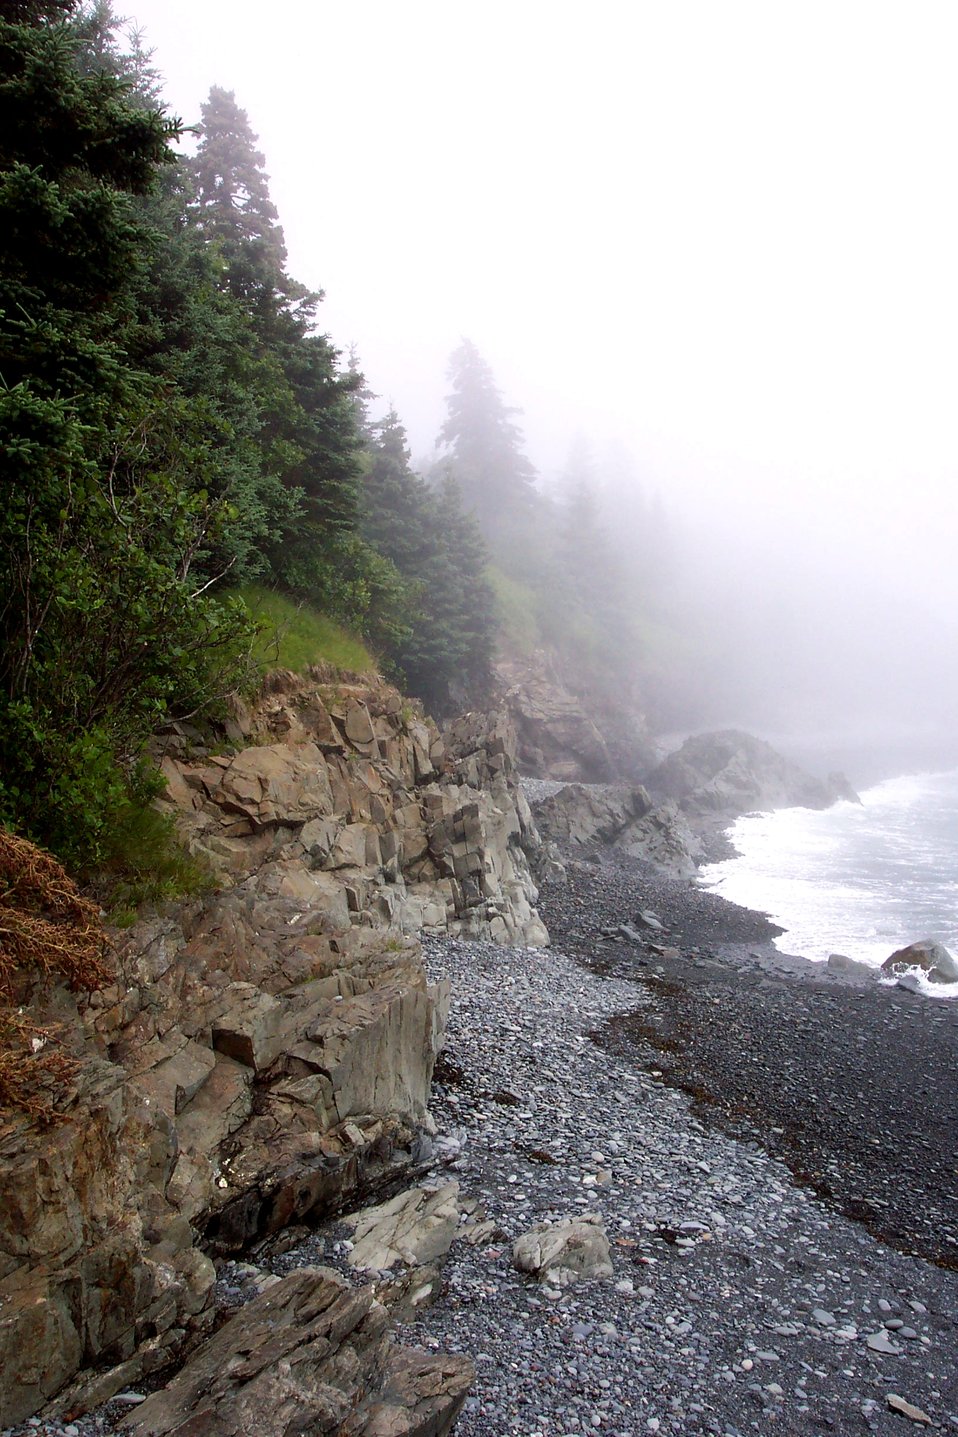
Cobble beach, rocky cliffs, and fog-shrouded evergreens at West Quoddy Head.